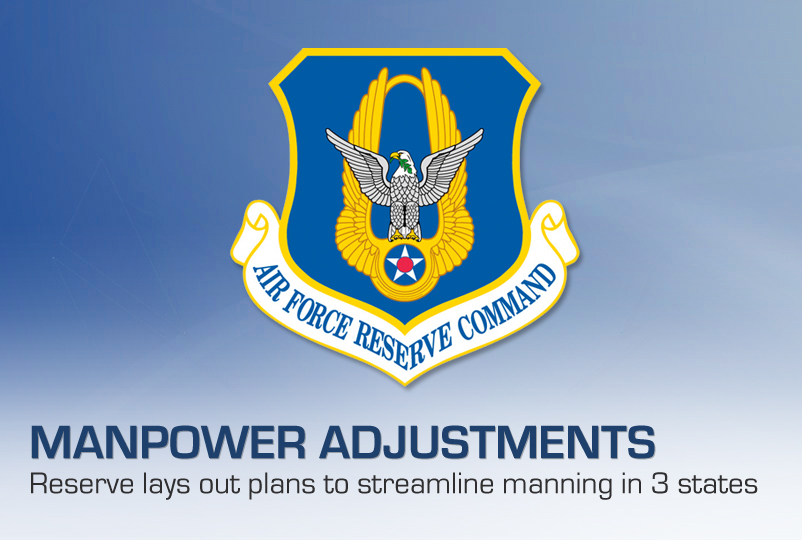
Manpower Adjustments